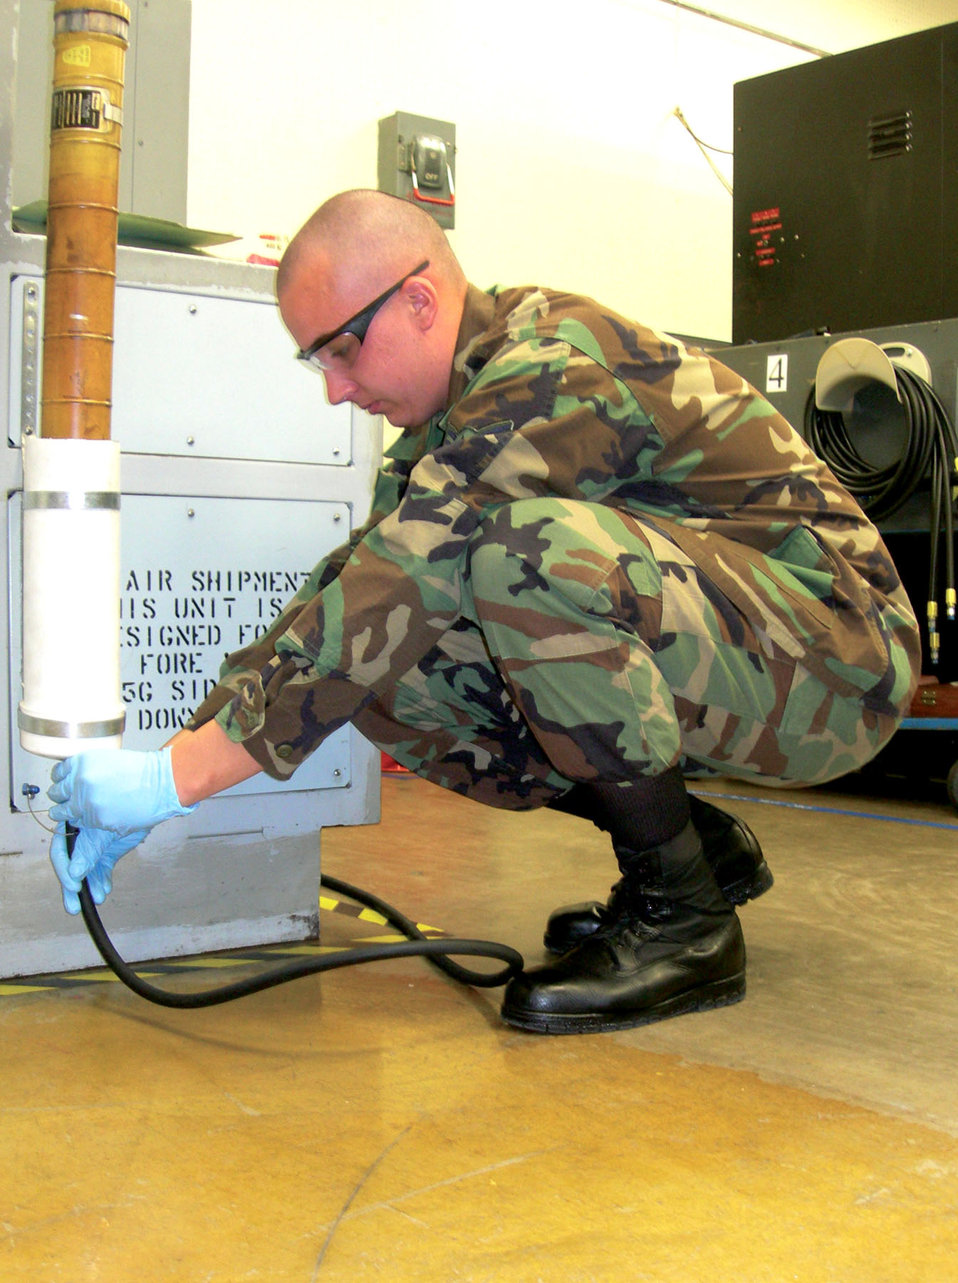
Hydraulics shop 'Leans' into AFSO 21

Airman 1st Class Nathaniel Dollar charges air into a flight control accumulator on the PVC-pipe container his shop created to make the maintenance process safer and more efficient. He is a hydraulics systems journeyman with the 56th Component Maintenance Squadron at Luke Air Force Base, Ariz.